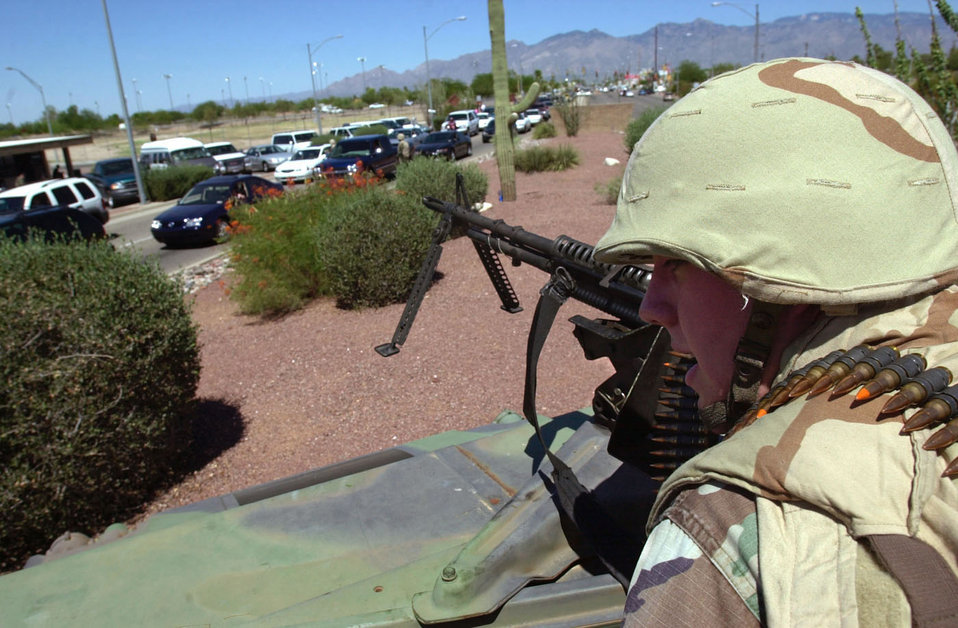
Tight security

DAVIS-MONTHAN AIRFORCE BASE, Ariz. -- In response to the attack on the World Trade Center and the Pentagon, the U.S. military has been operating in threat condition delta, the highest alert condition. The 355th Security Force Squadron here, performed security checks on every person and vehicle before they entered the base. Airman 1st Class Stacy Sells mans an M-60 machine gun in front of the base gate.